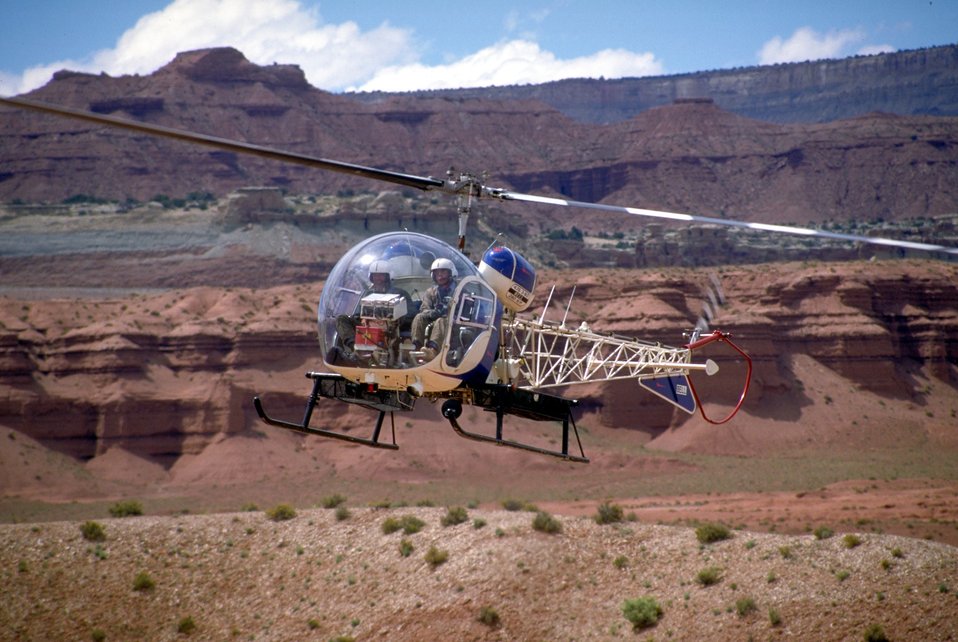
Wild Horse gather, San Rafael Swell.